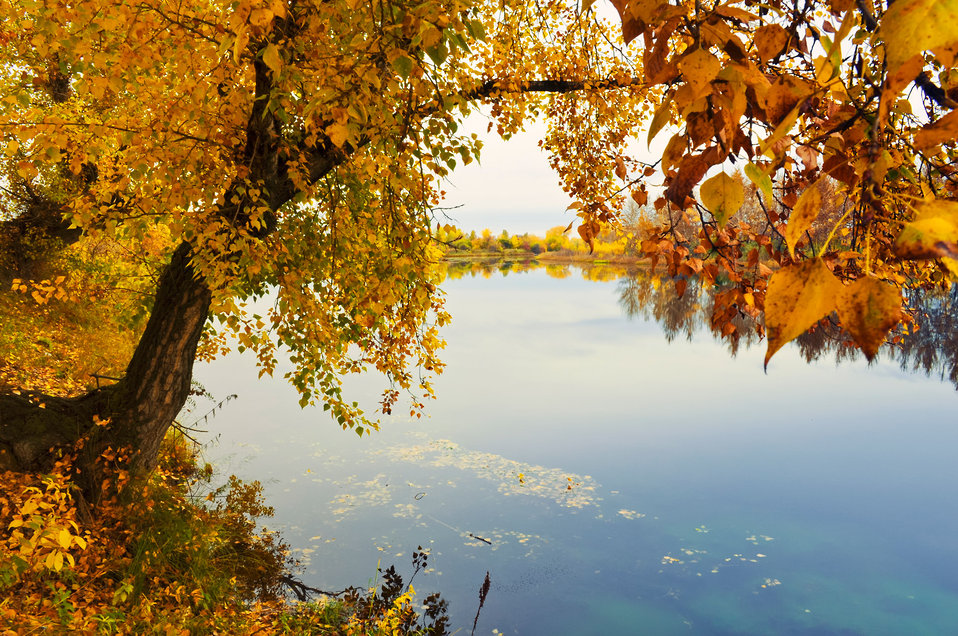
Autumn river bank

Yellow trees on the river bank.